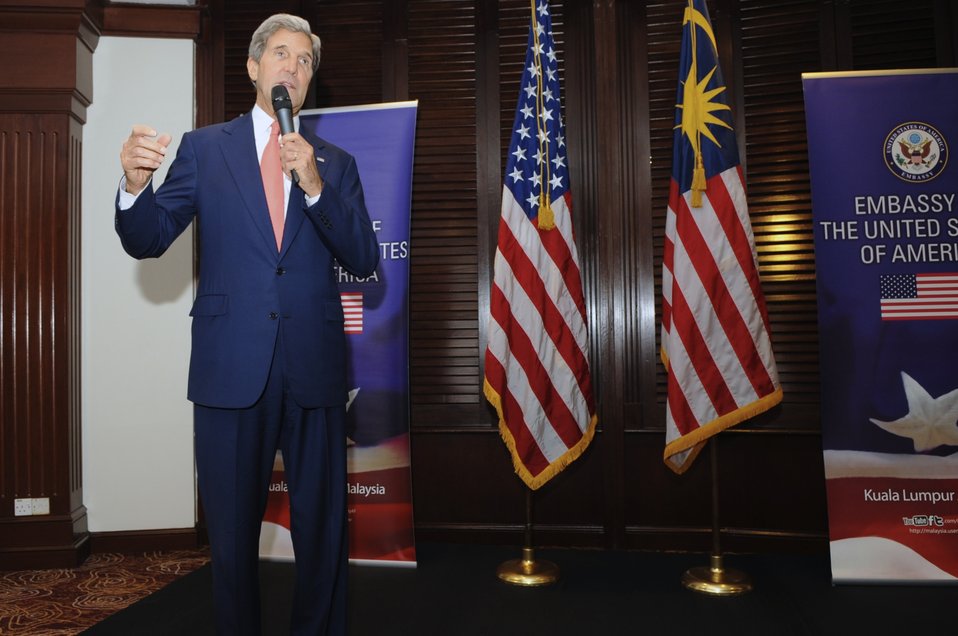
Secretary Kerry Addresses Staffers From Embassy Kuala Lumpur

U.S. Secretary of State John Kerry addresses staffers from Embassy Kuala Lumpur during his first visit to Malaysia on October 10, 2013.